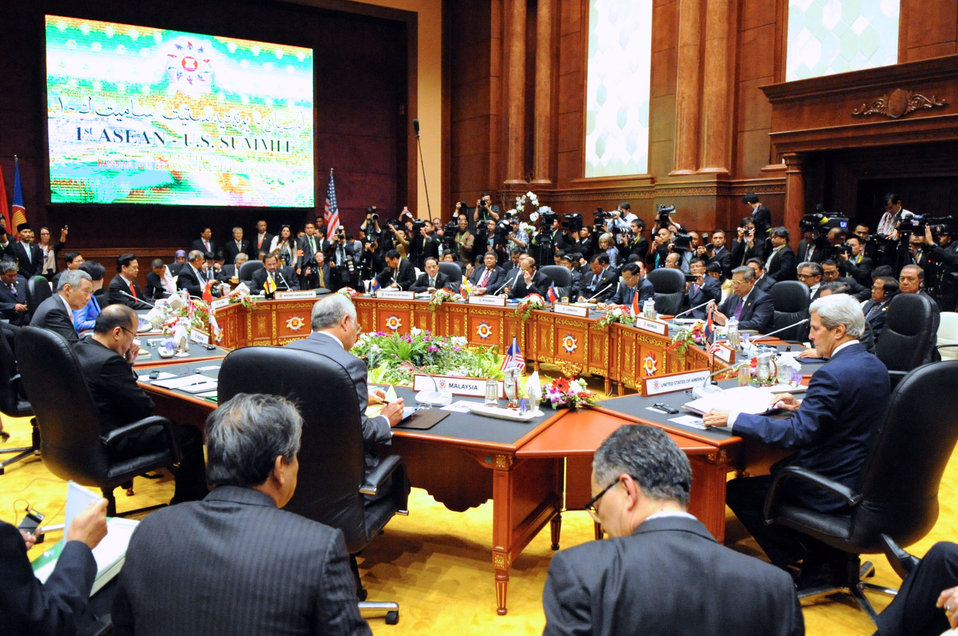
Secretary Kerry Addresses the U.S.-ASEAN Summit

U.S. Secretary of State John Kerry addresses the 10 member-nations of the Association of Southeast Asian Nations at the outset of a U.S.-ASEAN Summit meeting in Bandar Seri Begawan, Brunei, on October 9, 2013.